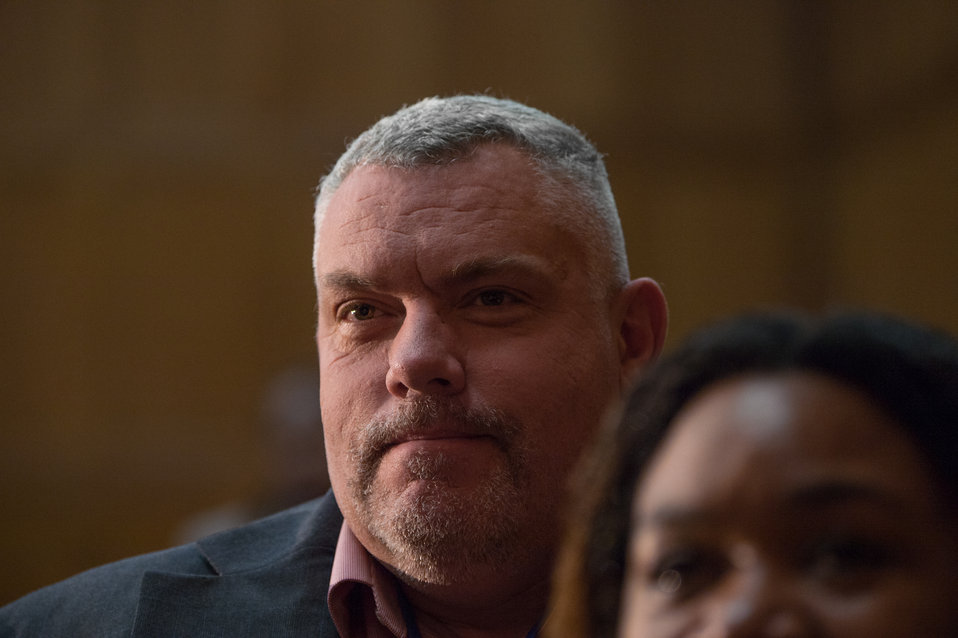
U.S. Department of Agriculture (USDA) personnel who have served, or are serving in a Uniformed Armed Service are called by their past or present Service to stand and be honored with the singing of each of the major Service songs sung by soprano Amy Keesun Kwon, during the 2013 USDA Veterans’ Day Observance, whose theme is “VALOR, COURAGE, SACRIFICE – HONORING ALL WHO SERVED,” in Washington, DC, on Wednesday, November 20, 2013.